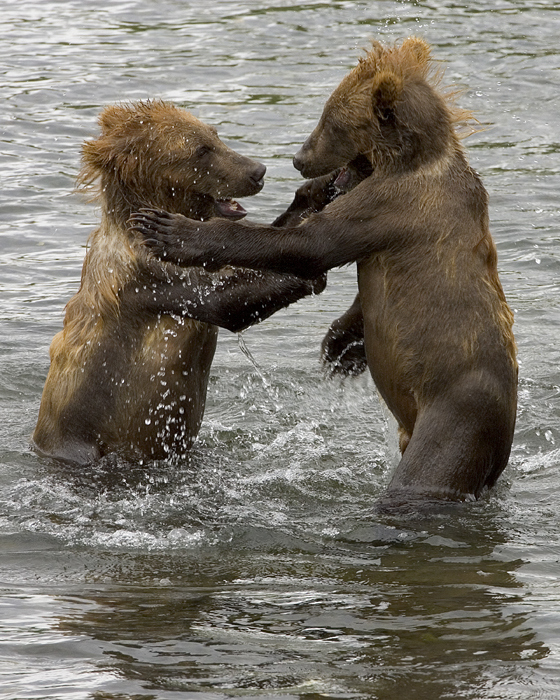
Brown bear cubs wrestling in the water

Two grizzly bear cubs playing on their hind legs while in the water.